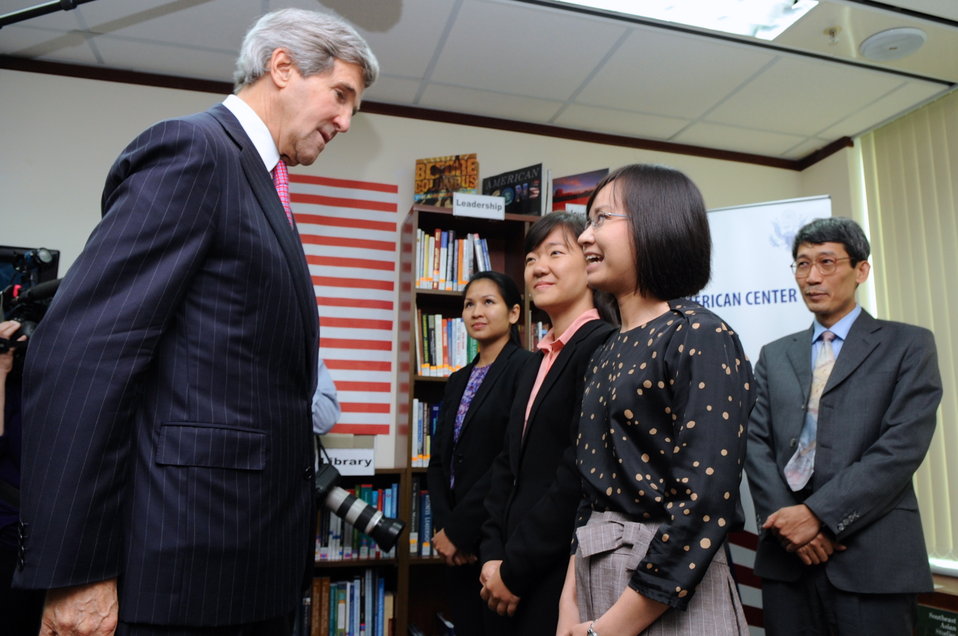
Secretary Kerry Meets U.S. Fulbright School Faculty and Staff

U.S. Secretary of State John Kerry meets with faculty and alumni of the Fulbright School in Ho Chi Minh City, Vietnam, on December 14, 2013.